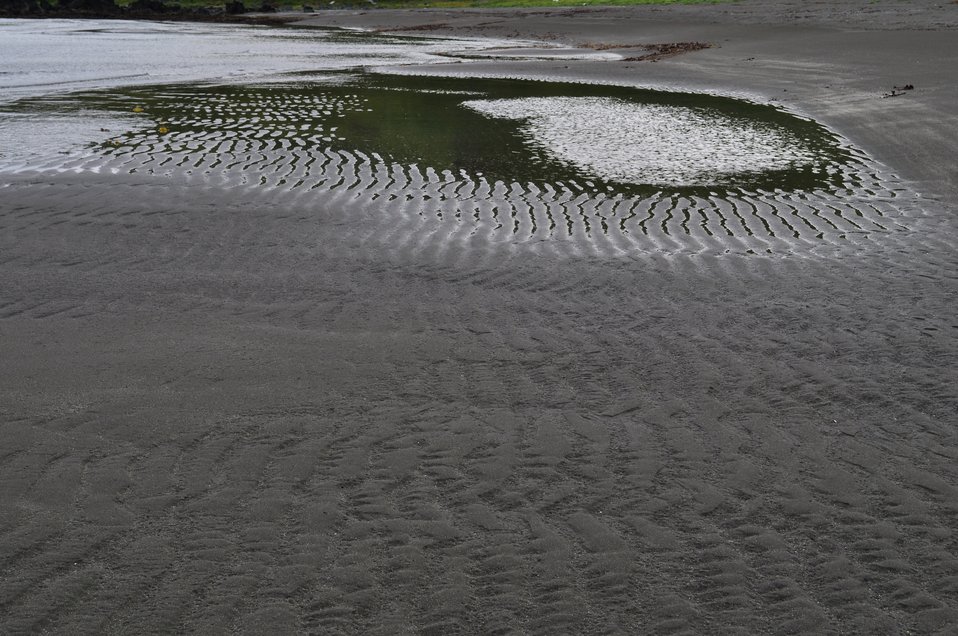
Black volcanic sand bottom at low tide. Note the ripple marks apparent in both the wet areas and in the bare sand.